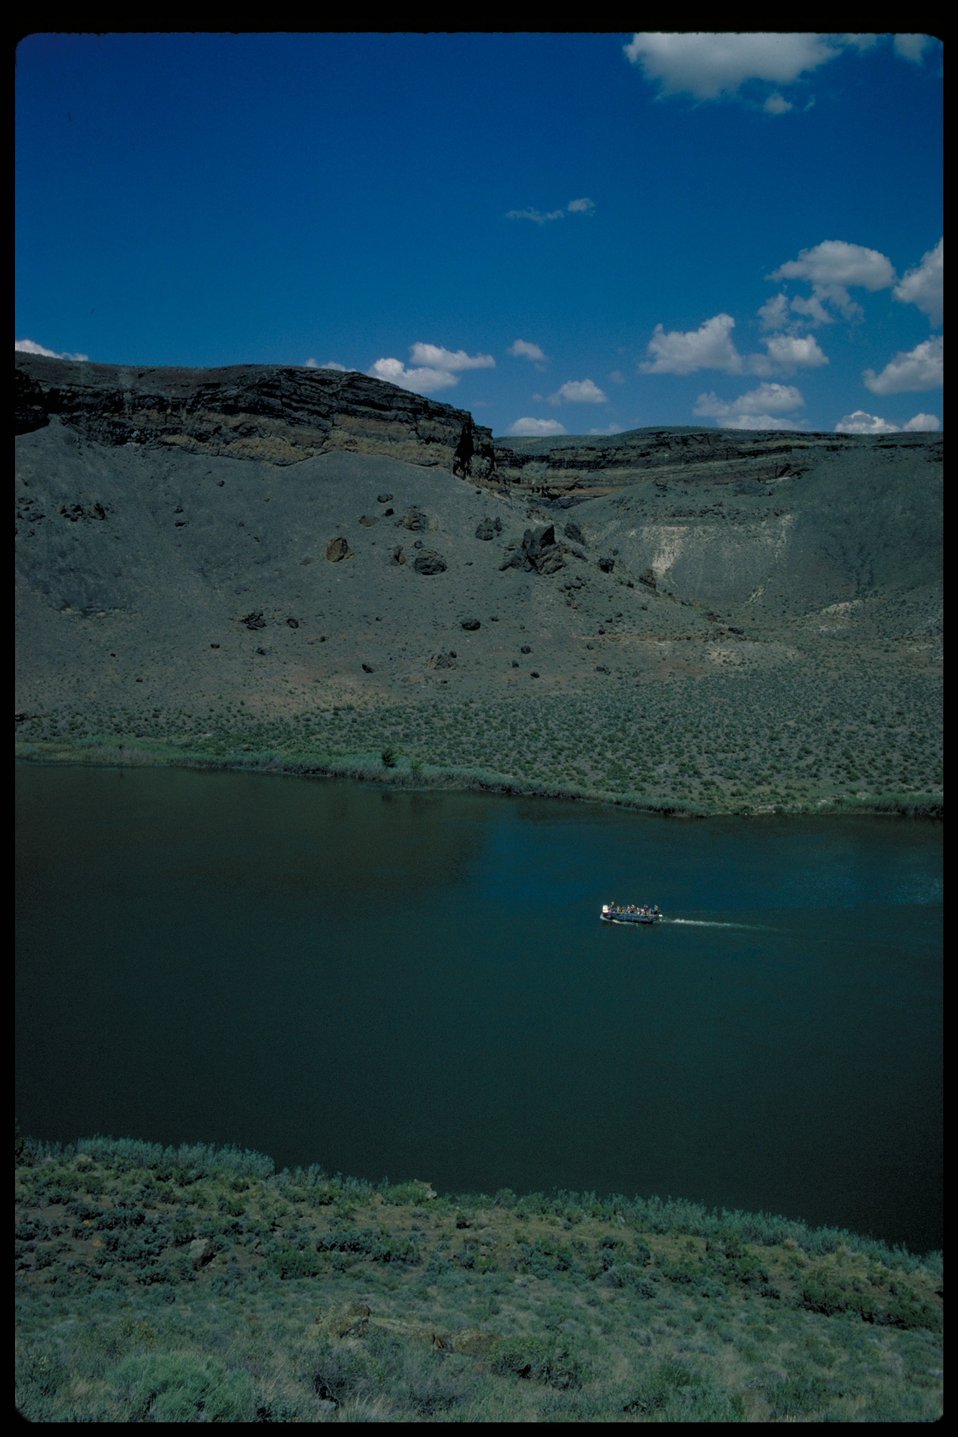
Birds of Prey National Conservation Area BOP Owyhee Field Office LSRD Lower Snake River District